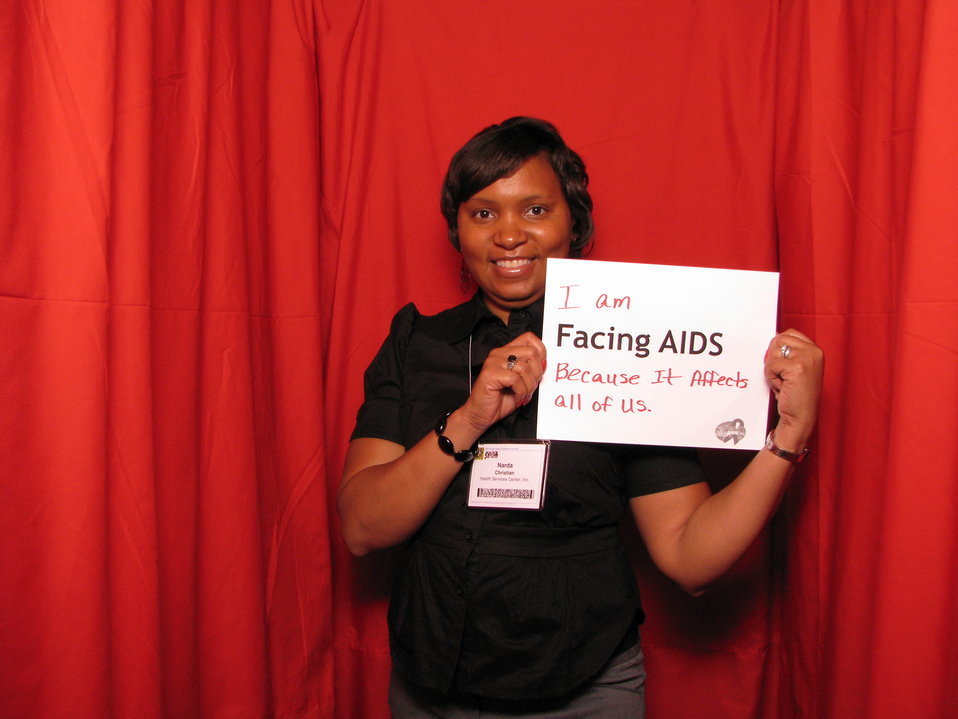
I am FACING AIDS because it affects all of us.

From the AIDS.gov photo booth at the U.S. Conference on AIDS, September 2010 (Orlando, FL).